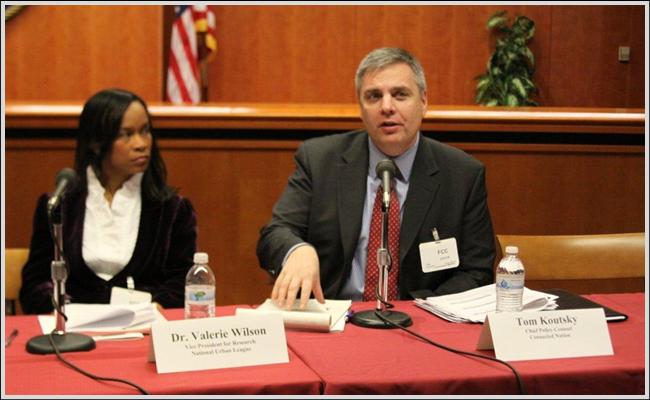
Dr. Valerie Wilson and Tom Koutsky

Panel 1: What have we Learned from Academic Studies on How to Close the Broadband Adoption Gap